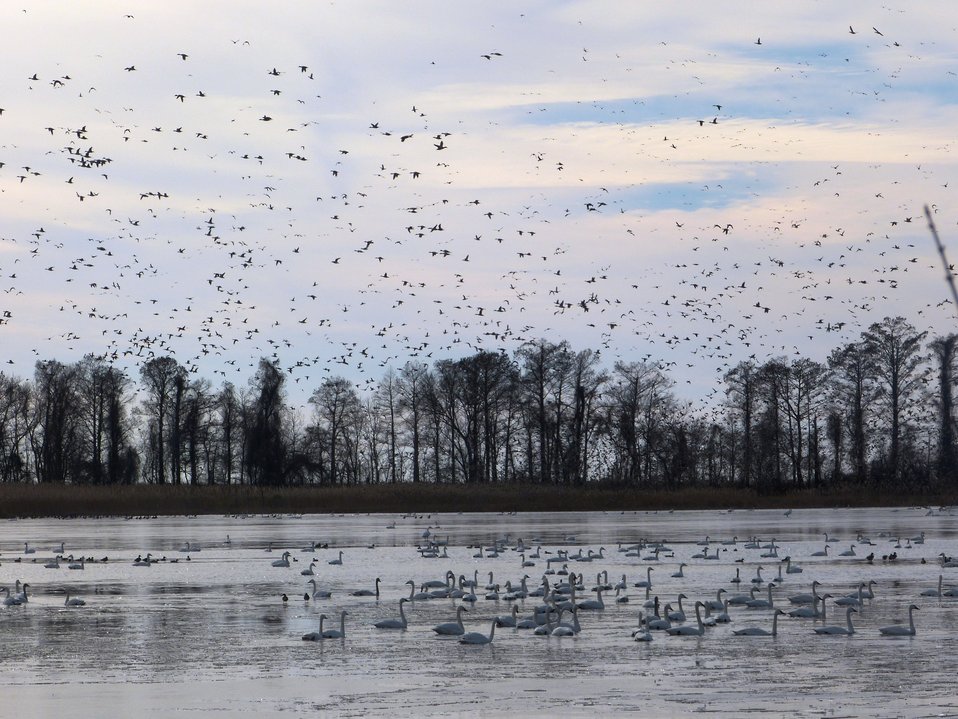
A mixed flock - 3

At Mattamuskeet National Wildlife Refuge in North Carolina. The Refuge’s prime location along the Atlantic Flyway makes it a vitally important stopover for wintering waterfowl.

In total, the Refuge attracts more than 200,000 ducks, geese and swans from November through February.